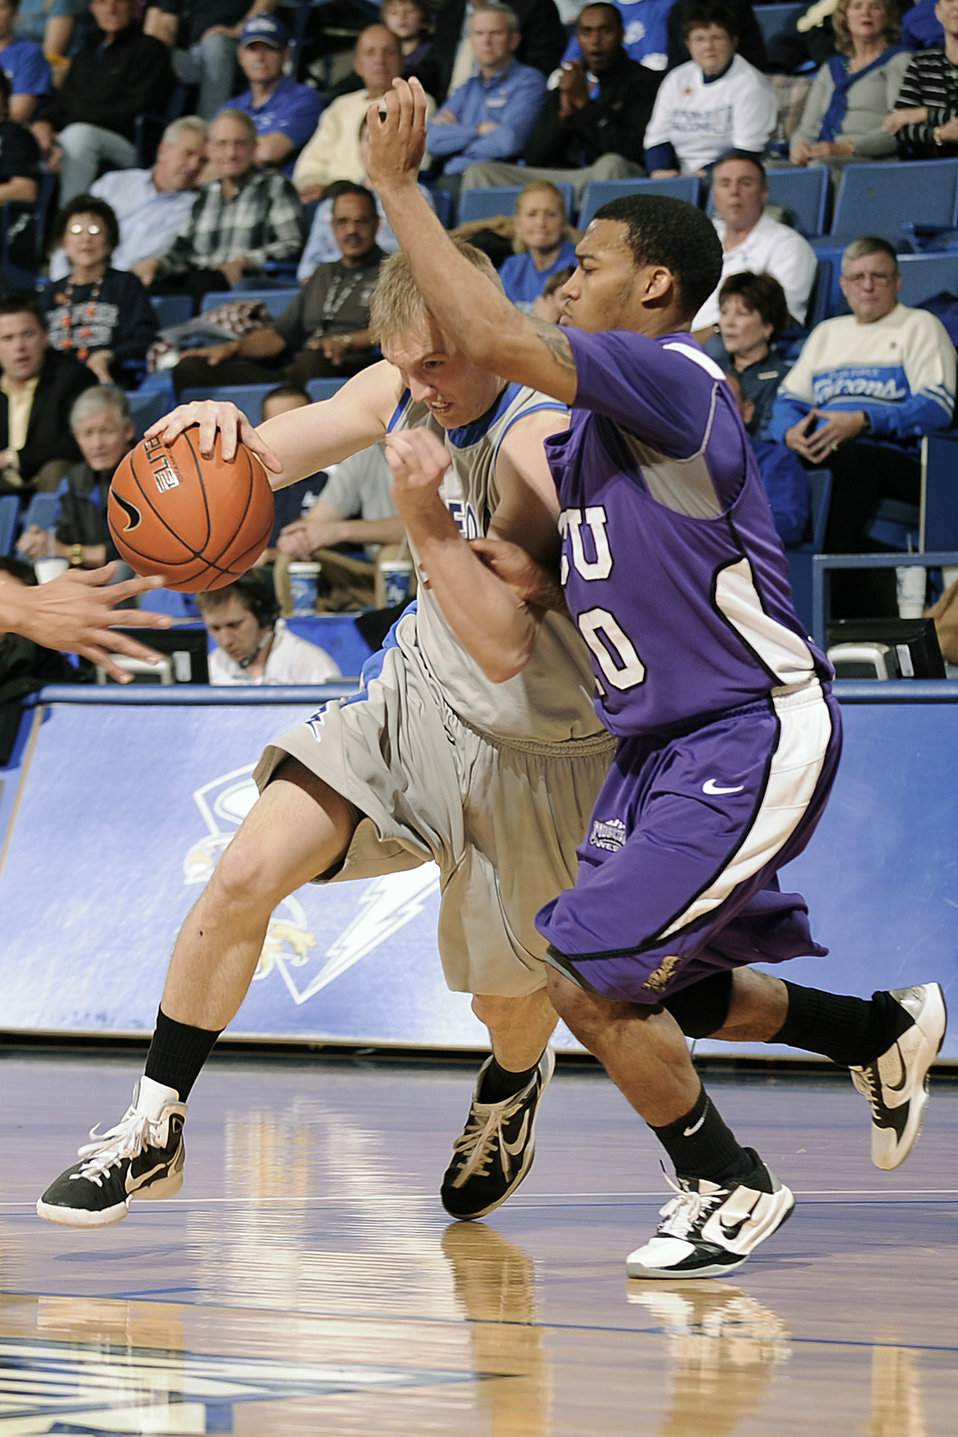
Falcons vs. Horned Frogs

The Air Force Academy's Taylor Stewart drives around Texas Christian University's Hank Thorns during the Falcons' final home game of the season March 2, 2011, at the Academy's Clune Arena.